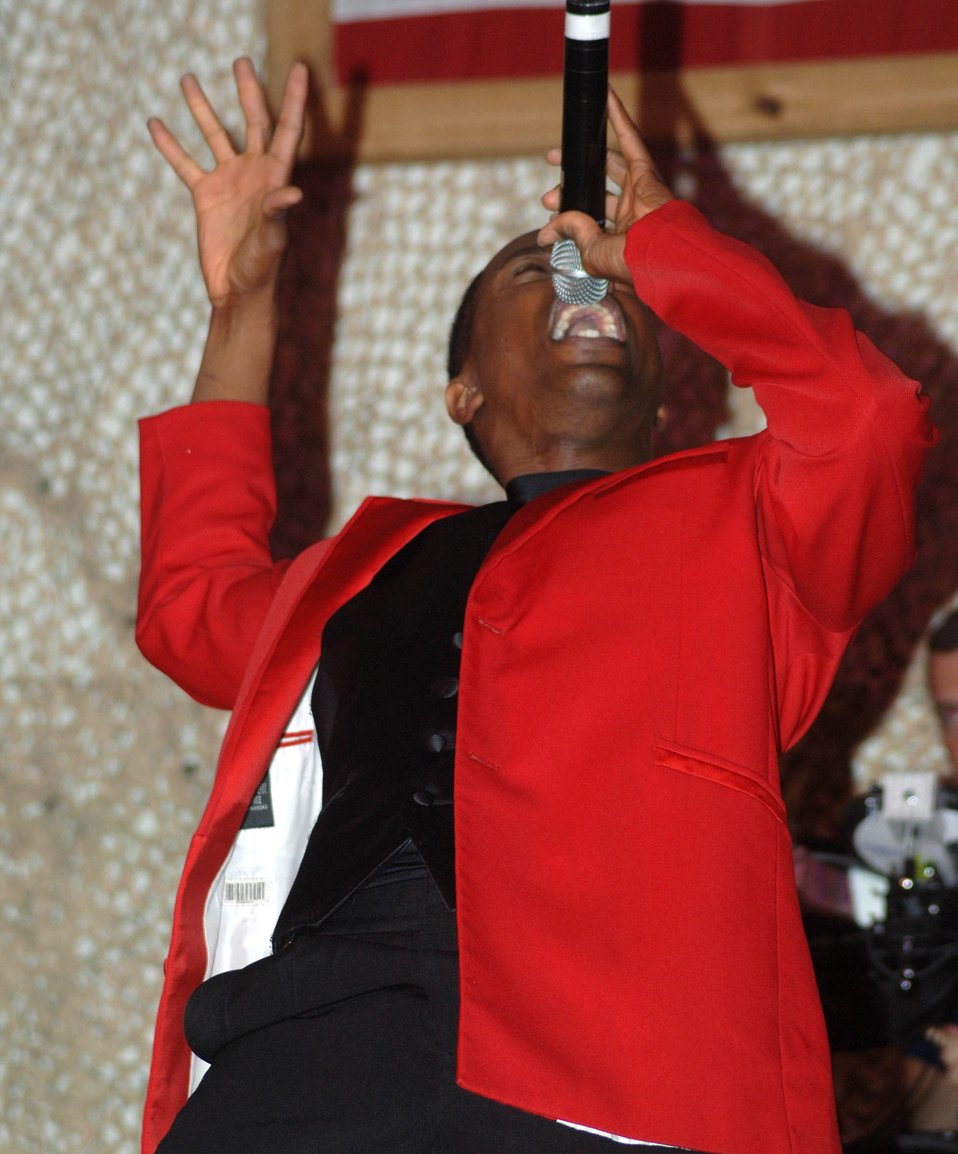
Tops in Blue rocks Bagram

Tops In Blue vocalist Tech. Sgt. Kenneth Bruce Jr. performs for a large crowd Nov. 23 at Bagram Air Base, Afghanistan. Known as the Air Force's expeditionary entertainers, Tops in Blue travels to wherever U.S. troops are stationed. The elite group, made up of 35 talented entertainers, performs for servicemembers and their families throughout the world. Sergeant Bruce is an intelligence evaluator from Hickam Air Force Base, Hawaii.